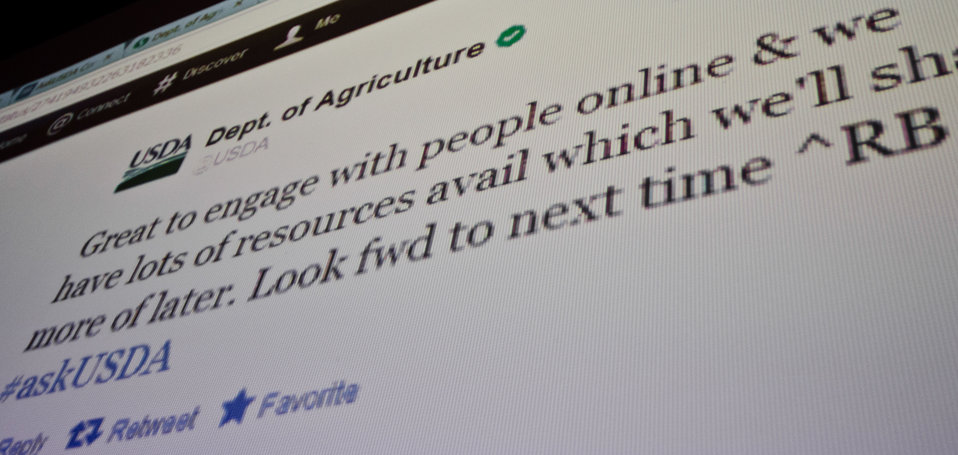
The closing tweet from Robert Bonnie, Agriculture Senior Advisor to the Secretary for Environment and Climate Change who hosted the live Virtual Office Hours session on Twitter, in Washington, D.C. on November 29, 2012. Online questions about U.S. Department of Agriculture's (USDA) record on conservation achievements and efforts to reconnect Americans to the great outdoors were answered during the event. Questions were submitted live and in advance to the @USDA Twitter account using the hashtag #AskUSDA.